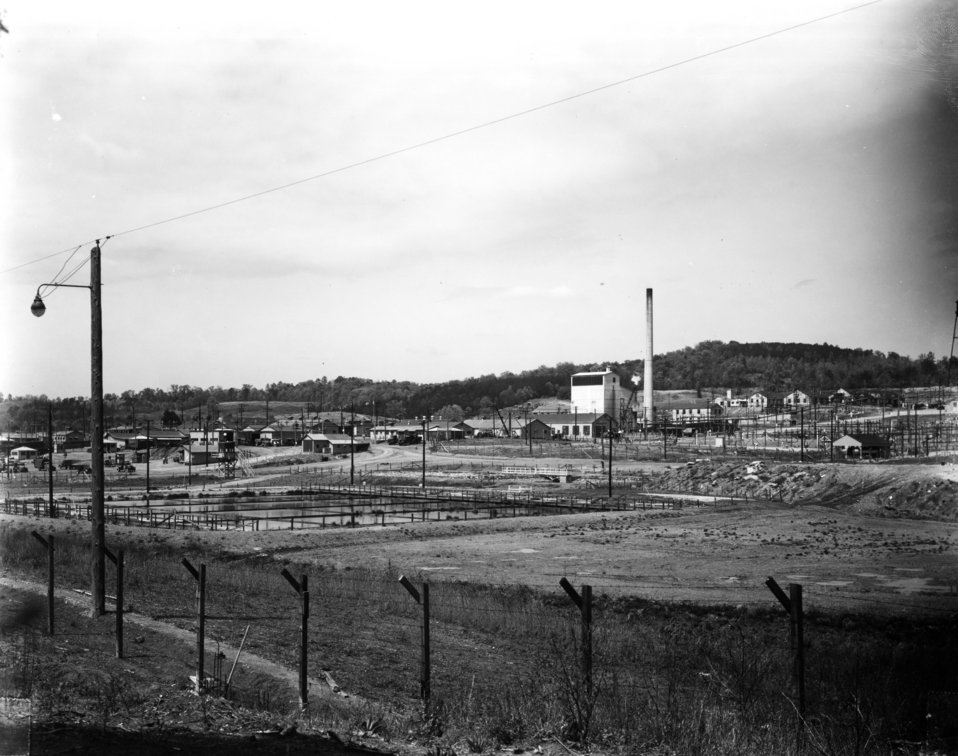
X-10 at Oak Ridge